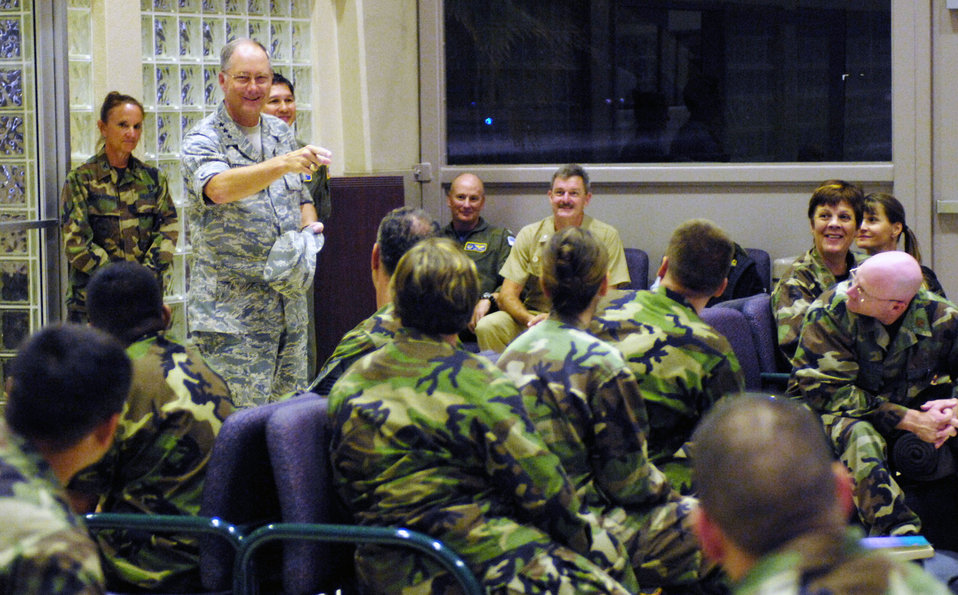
Medics on the move

Lt. Gen. Loyd S. Utterback speaks to medics prior to them leaving for a humanitarian mission July 20 at the passenger terminal on Hickam Air Force Base, Hawaii. Approximately 50 Airmen, Soldiers and Sailors will travel to Vanuatu, Kiribati and Nauru to provide medical, dental and engineering support to the residents of the Pacific islands. General Utterback is the 13th Air Force commander.